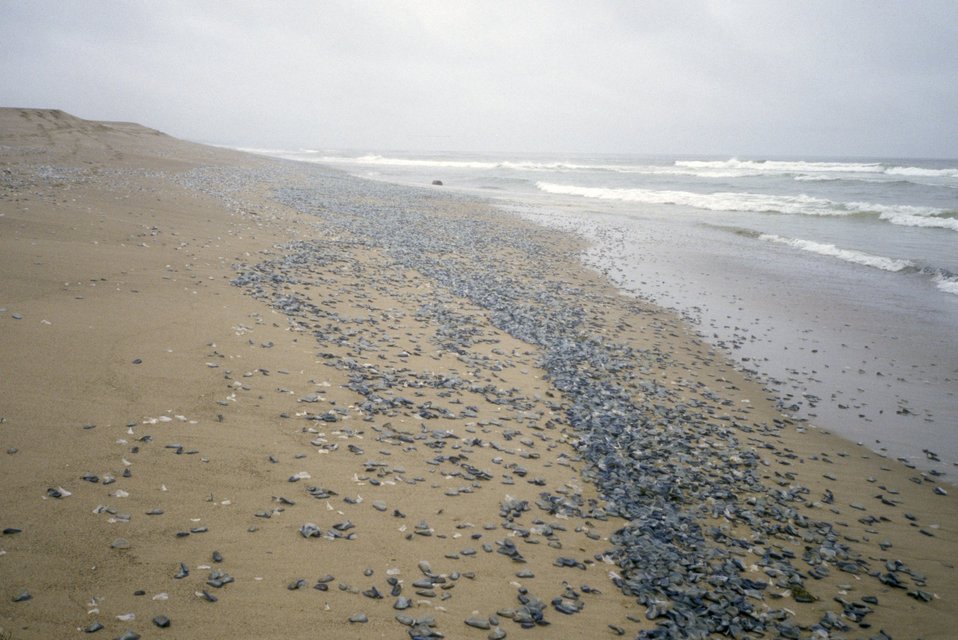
Point Reyes Great Beach